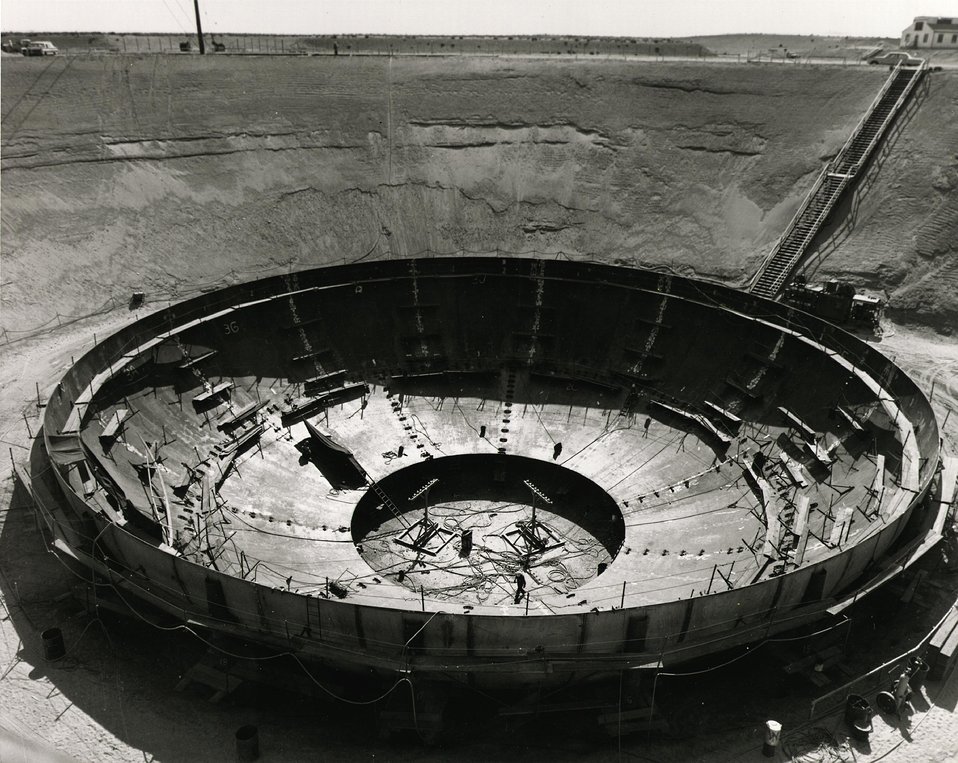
From an excavated depth of 80 feet below the desert floor, the Fast Flux Test Facility (FFTF) core containment takes shape at the Atomic Energy Commission's Hanford Facility near Richland, Washington. The FFTF is a test reactor. c. 1972.